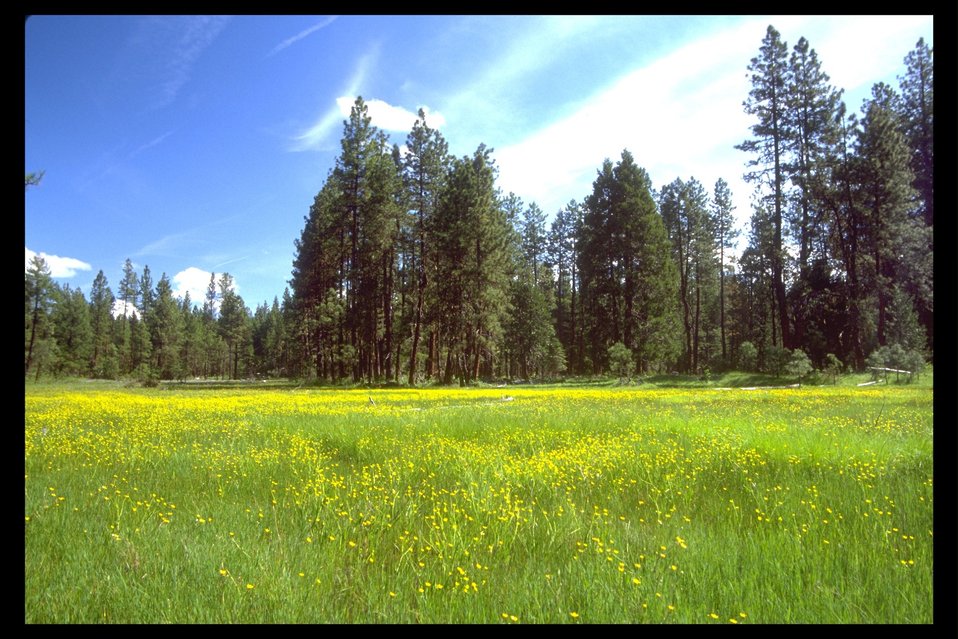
A wet meadow along Rancheria Road east of Butte Falls.